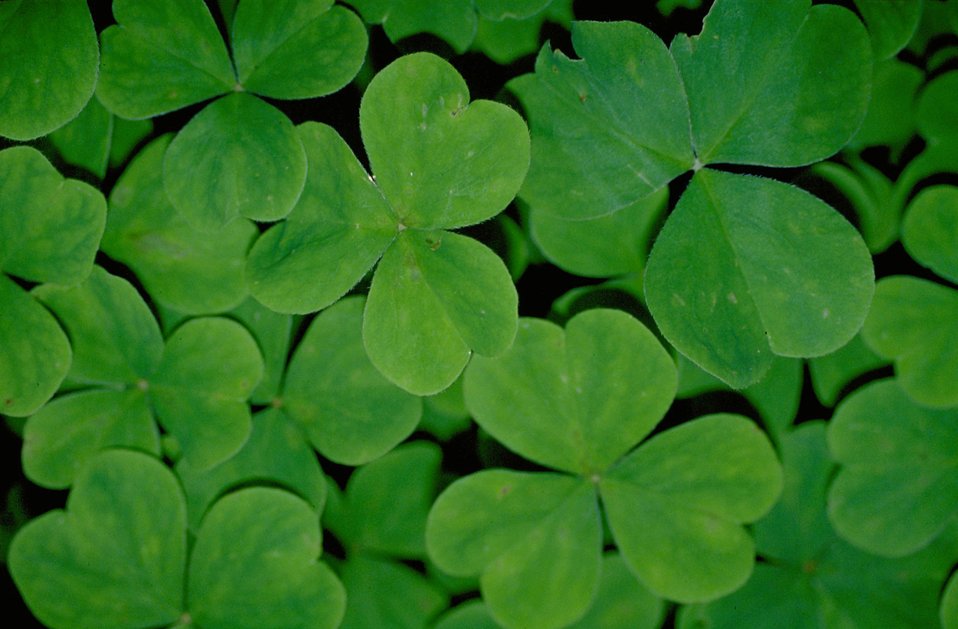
Oxallis